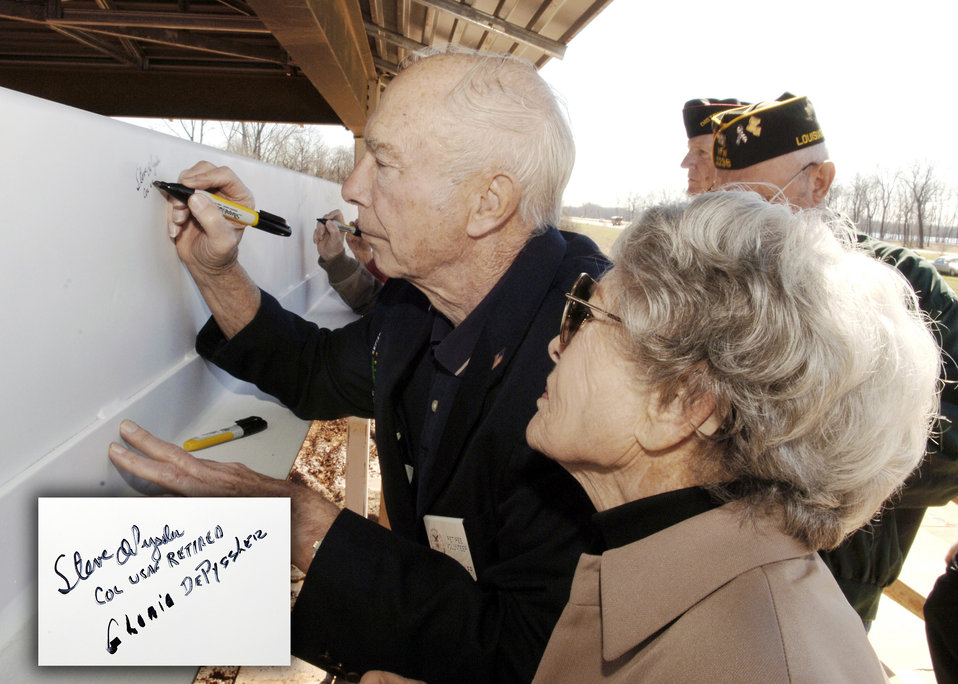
Colonel dePyssler

Retired Col. Steve dePyssler and his wife Gloria sign a beam Jan. 25, 2006, during the capping ceremony for the Louisiana War Veterans Home in Bossier City, La. Colonel dePyssler was instrumental in bringing the project to fruition.